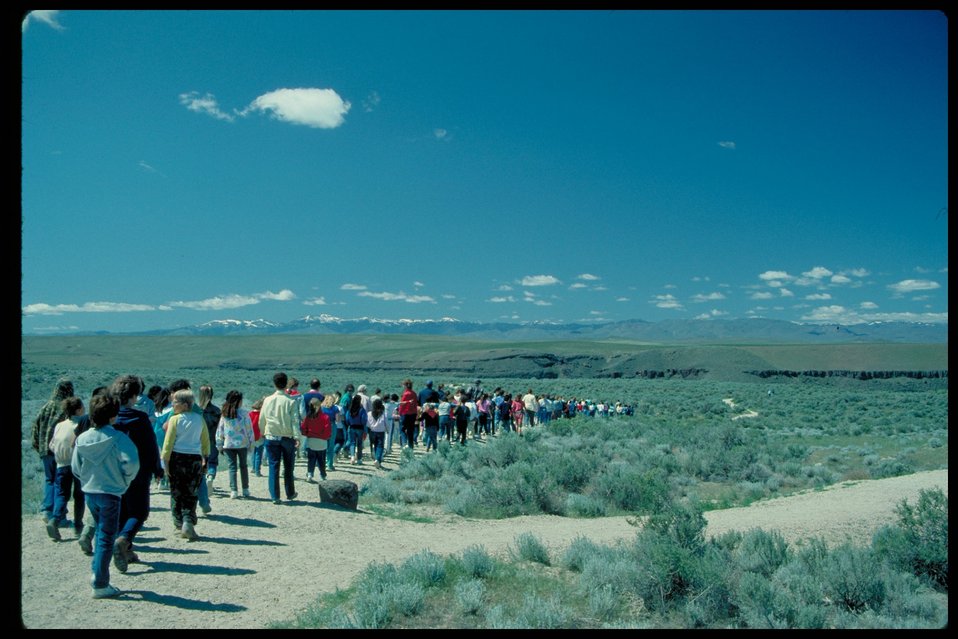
Dedication Point Birds of Prey National Conservation Area BOP Owyhee Field Office LSRD Lower Snake River District